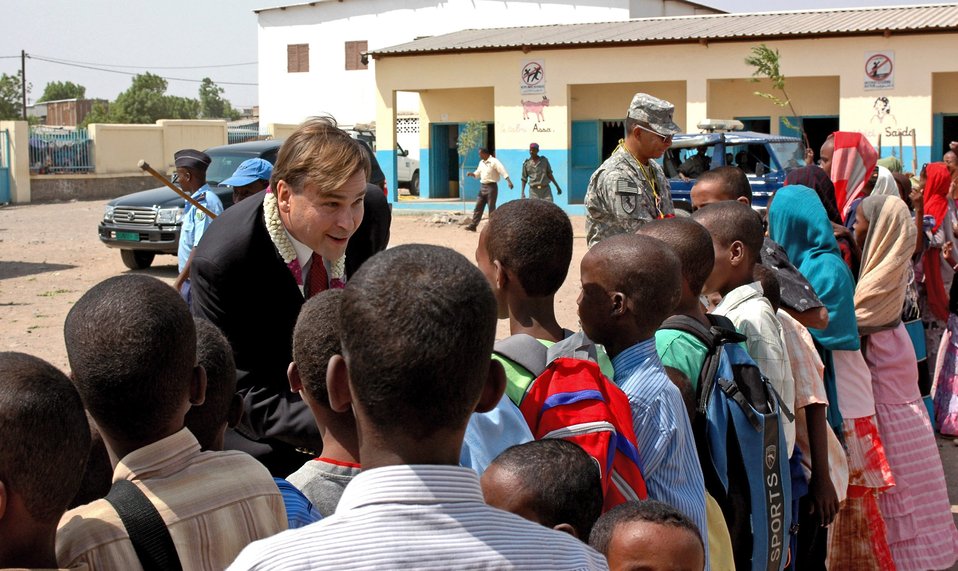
New additions to Djiboutian schools help children's education

Stuart Symington and Army Brig. Gen. Sanford Holman shake hands with the students of Goubetto primary school Sept. 6 during a dedication ceremony held at the village of Balbala. The ceremony marked the hand-over of new classrooms, a stocked library, bathroom facilities, a stage area for plays and an updated power supply to the school in the village of Balbala. Also dedicated were a kitchen and food preparation area, and a dining room for the school. Mr. Symington is the U.S. Ambassador to Djibouti and General Holman is the Combined Joint Task Force-Horn of Africa deputy commander. The project, which was handled by the Enterprise Aden Ali Company, began May 7 and finished on Aug. 7.